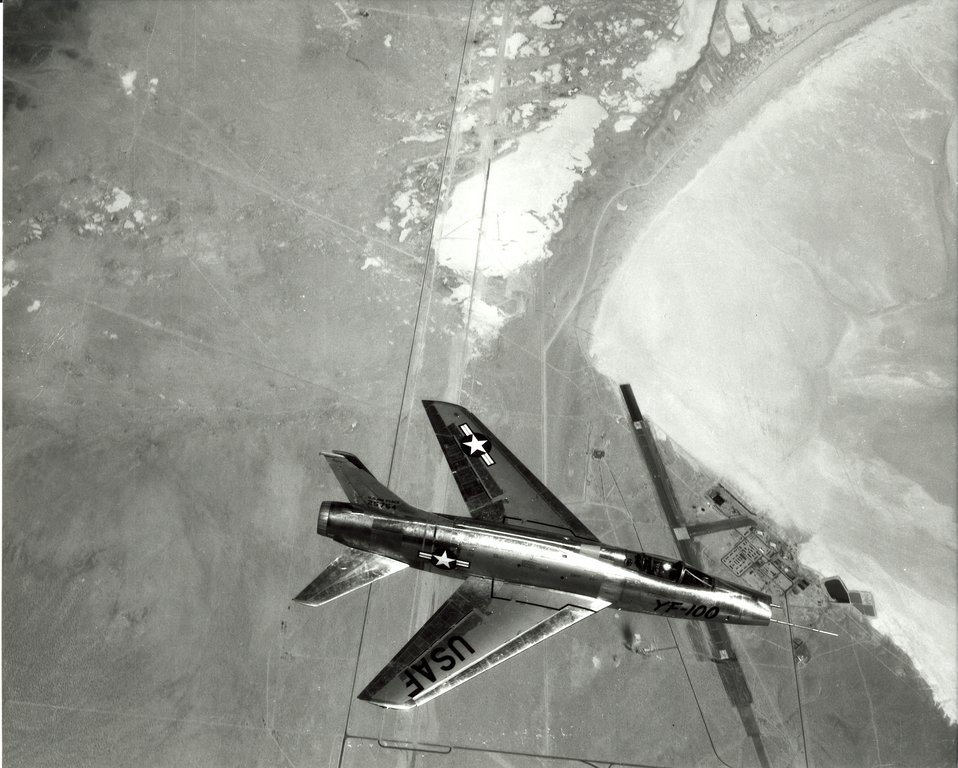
North American YF-100A

The YF-100A, the first aircraft to exceed Mach 1 on its first flight, flies over the North Base of Edwards Air Force Base, Calif., on its first flight May 25, 1953.